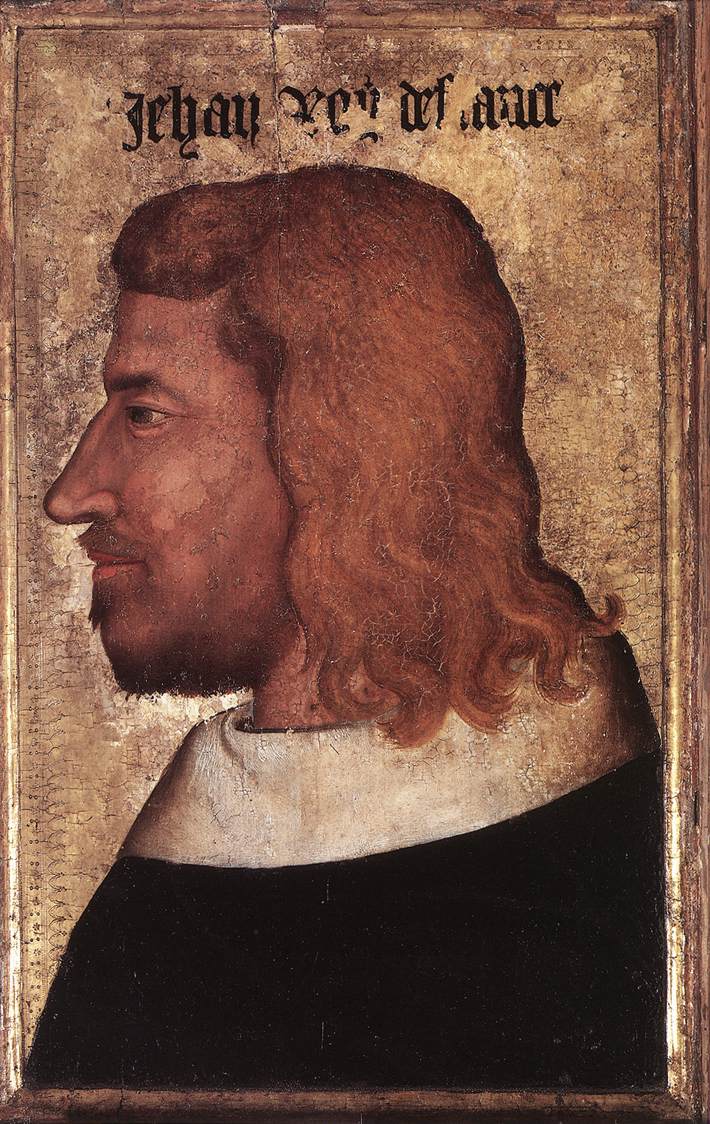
14th-century unknown painters - Portrait of Jean le Bon, King of France - WGA23666